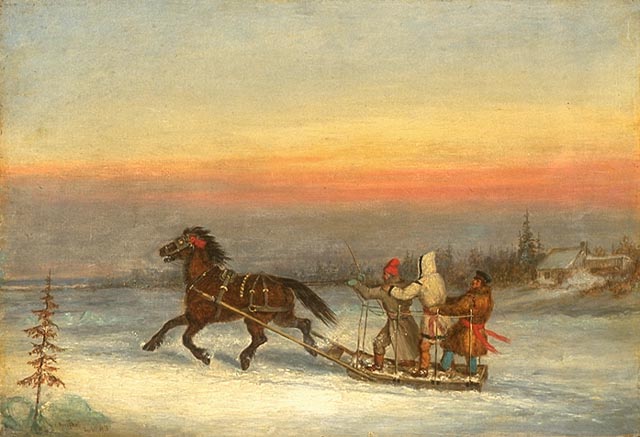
The River Road, oil on canvas painting by Cornelius Krieghoff, 1855, National Gallery of Canada